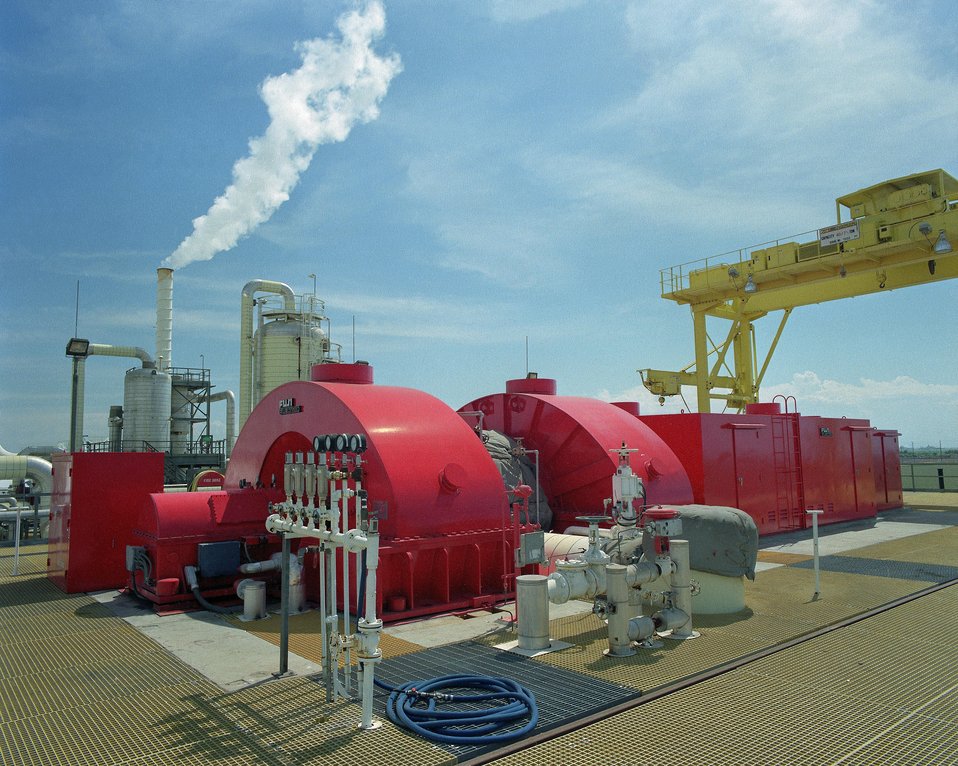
GENERATOR AT THE LEATHERS GEOTHERMAL POWER PLANT, IMPERIAL COUNTY, CALIFORNIA.